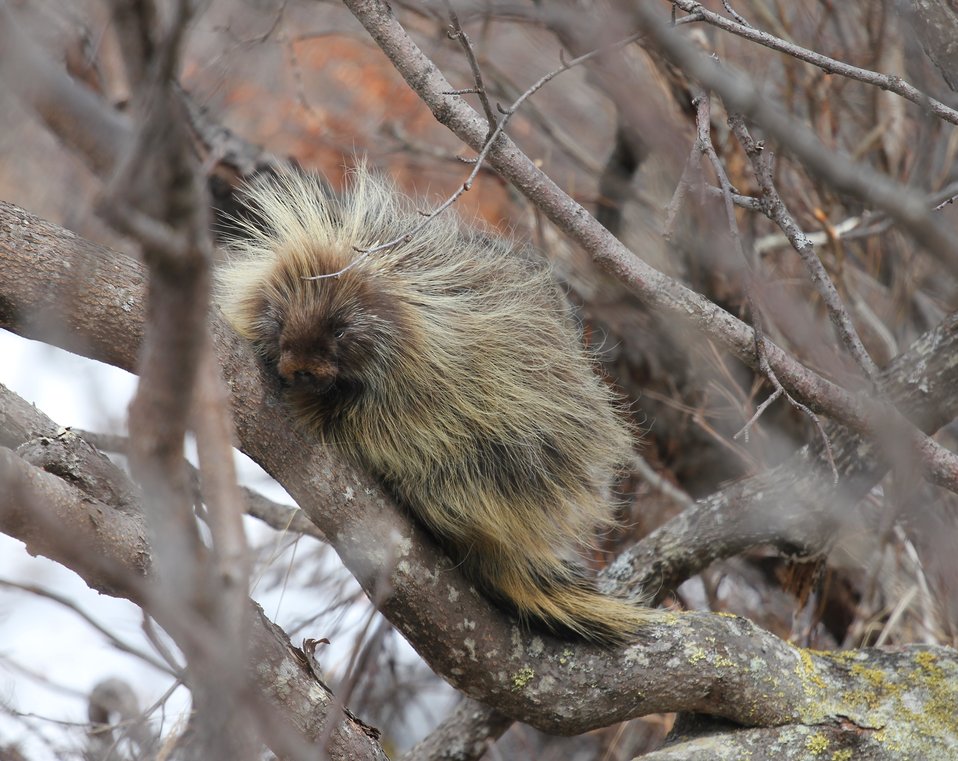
Porcupine

Andreafsky Wilderness, Yukon Delta National Wildlife Refuge